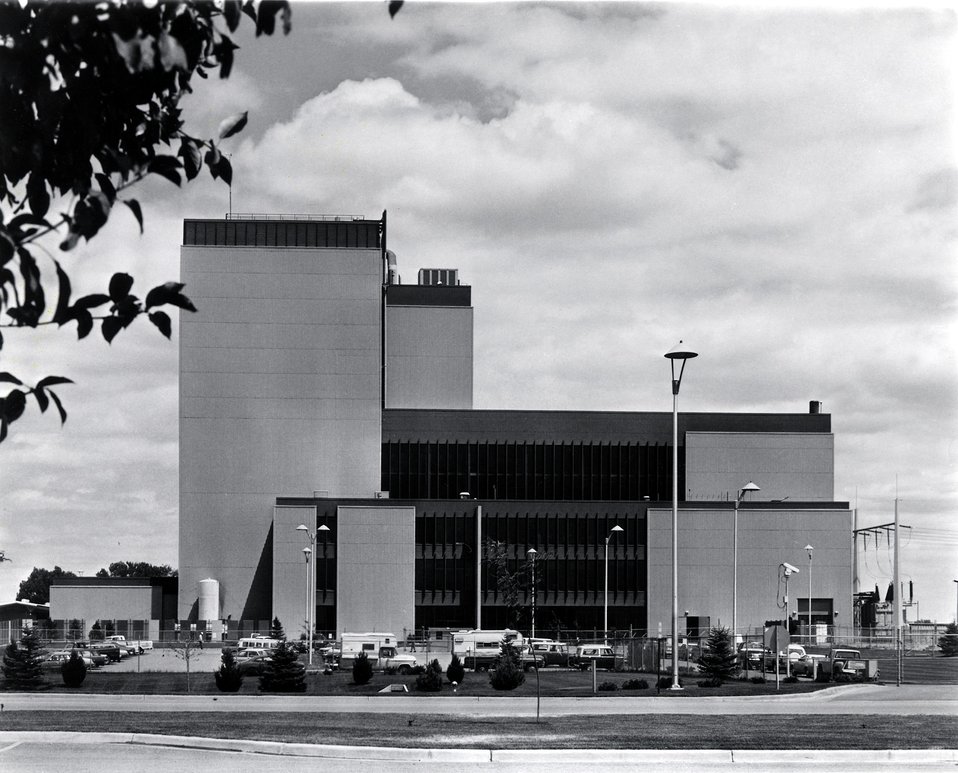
Fort St. Vrain